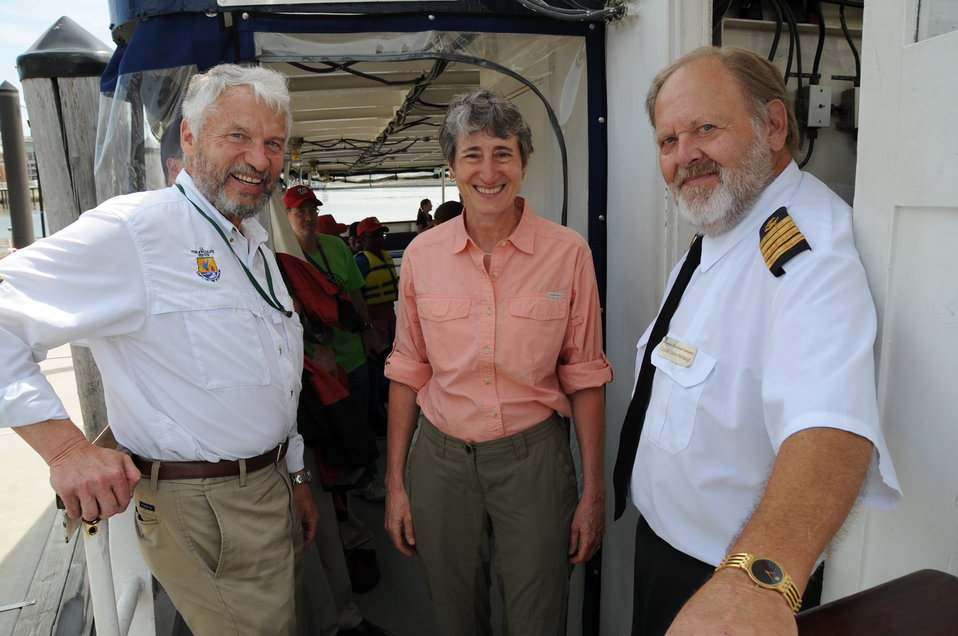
2013 National Fishing and Boating Week

Local students prepare to enjoy fishing at the annual kick-off of National Fishing and Boating Week on the Anacostia River in Washington D.C.